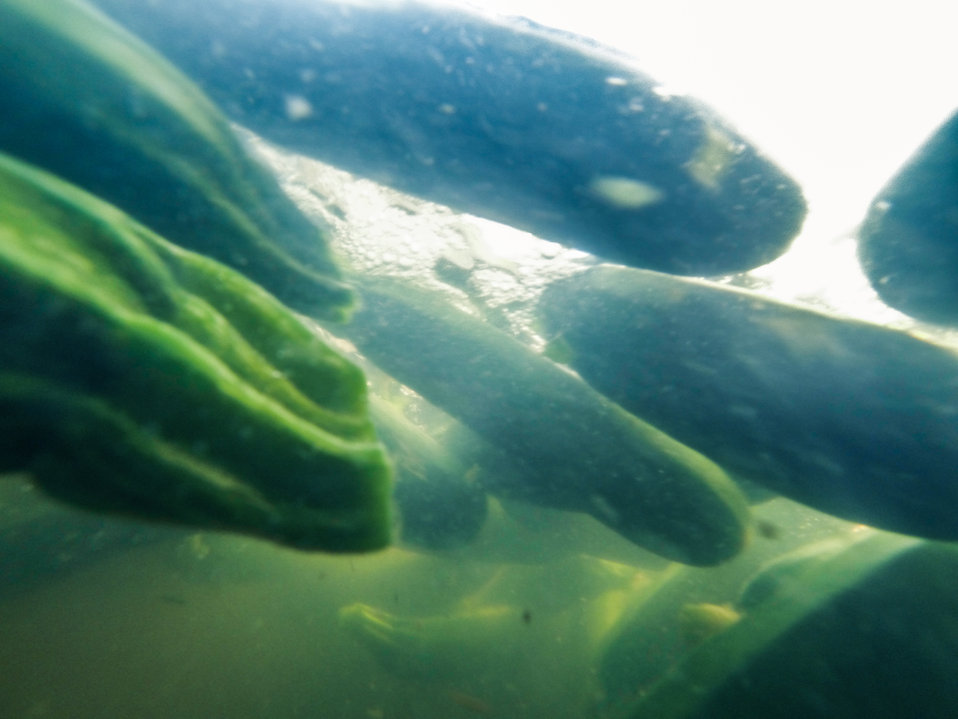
Migrant workers rinse away loose soil and bits of squash blossoms before packing the just-picked green zucchini squash, in Mechanicsville, VA on Friday, Sept. 20, 2013.